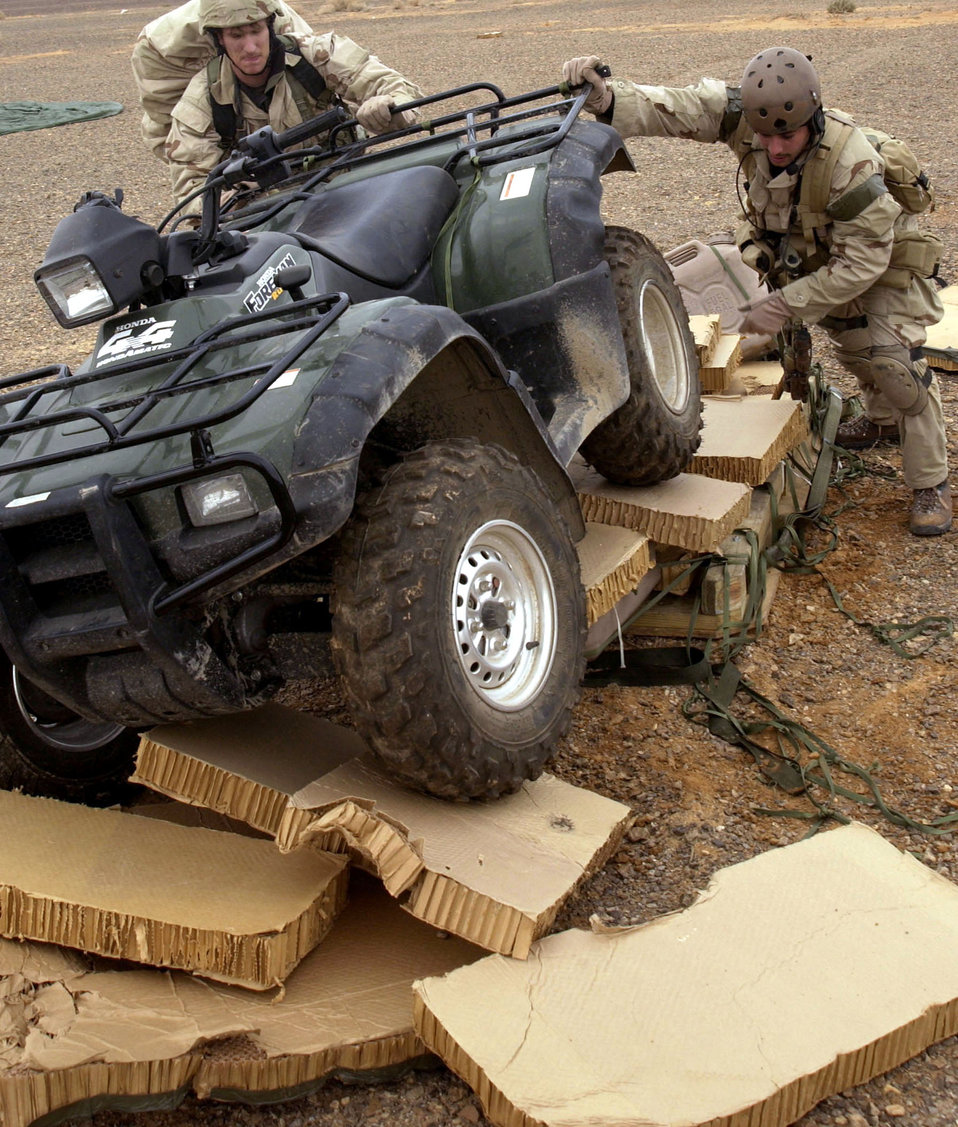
Jumping into danger

OPERATION ENDURING FREEDOM (AFPN) -- Pararescuemen from the 410th Air Expeditionary Wing unload an all-terrain vehicle after parachuting 800 feet from a C-130 Hercules during a training exercise at a forward-deployed location. The airmen jumped along with the vehicle while practicing operations in a hostile environment.